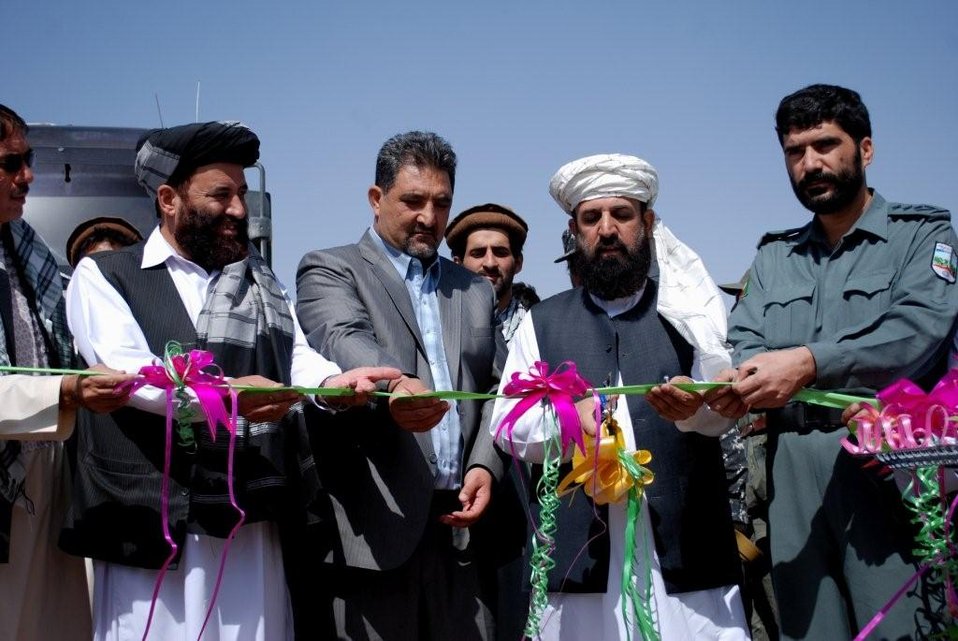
GHAZNI PROVINCIAL GOVERNOR, AND COMMUNITY LEADERS CELEBRATE ROAD CONSTRUCTION FOR THE GHAZNI TO GARDEZ ROAD